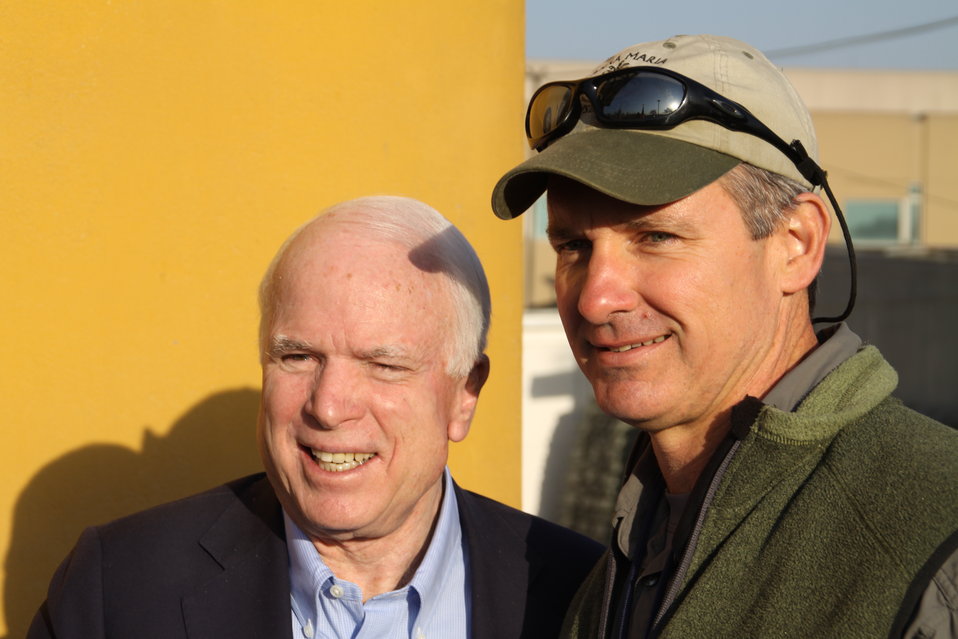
Senator McCain